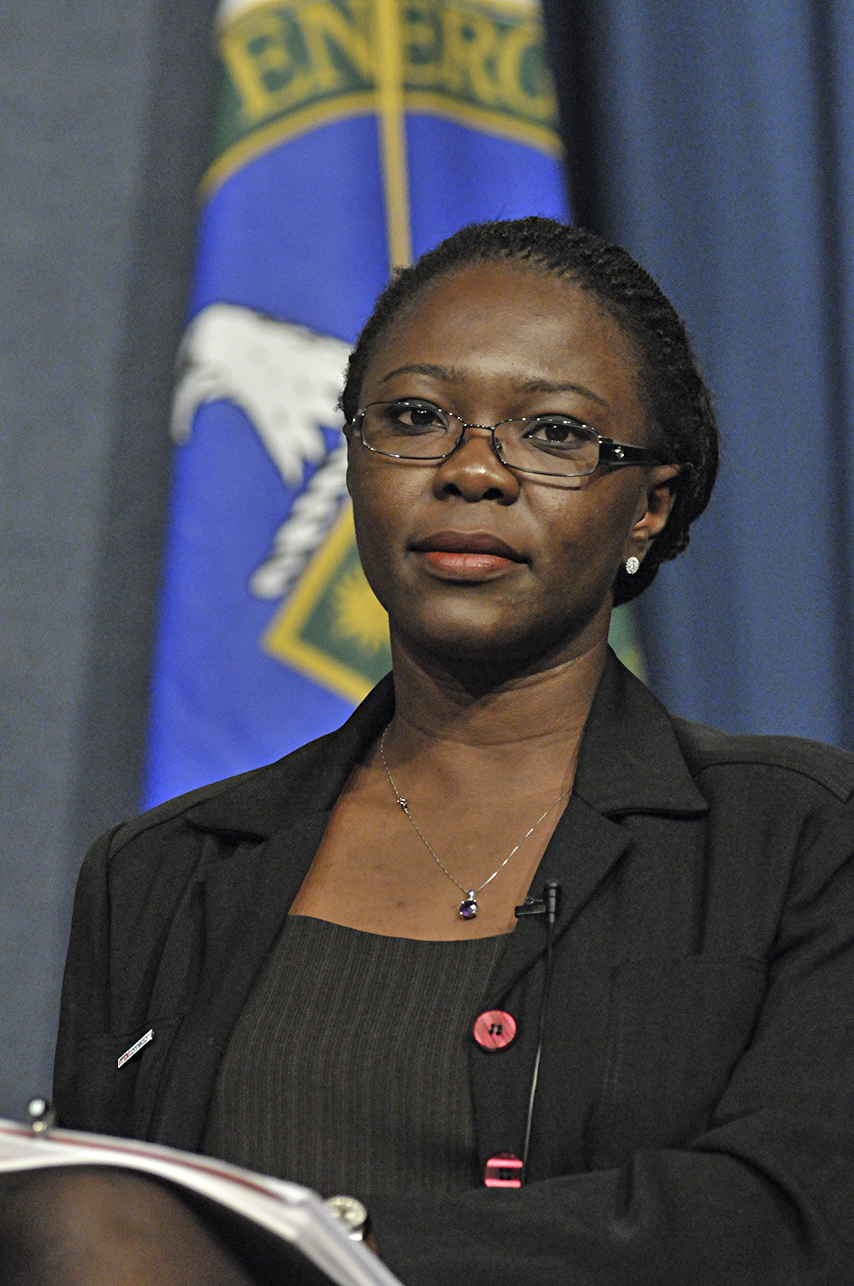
Panel: Opportunities and Solutions

Fumbi Chima, Vice President of Global Technology Services and Strategic Partnerships, Wal-Mart Inc, speaks on the Opportunities and Solutions Panel on September 24, 2013.